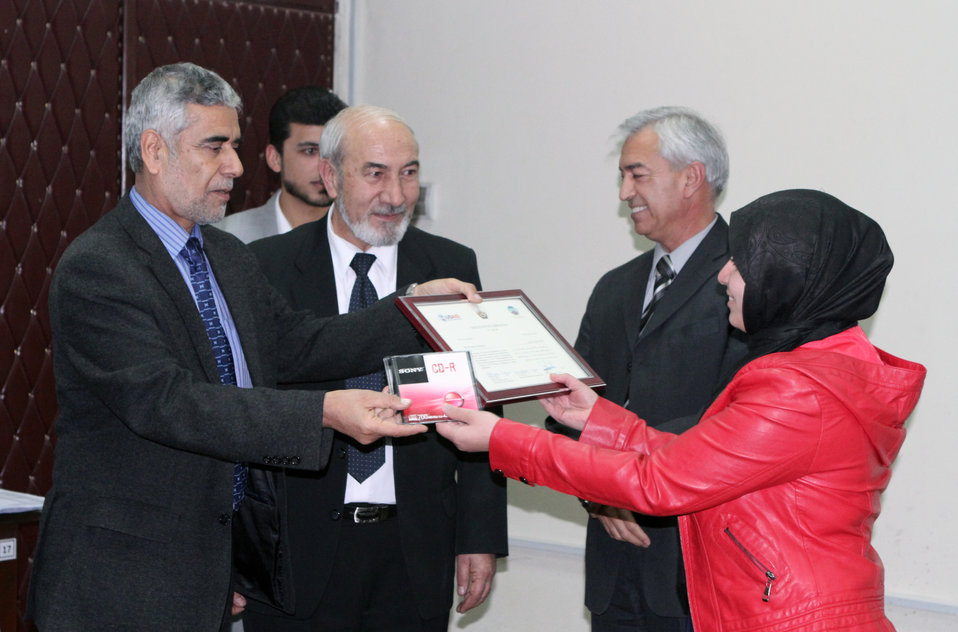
Dr. Habibullah Habib, Kabul University Chancellor, hands over a certificate of completion to a Faculty of Engineering student